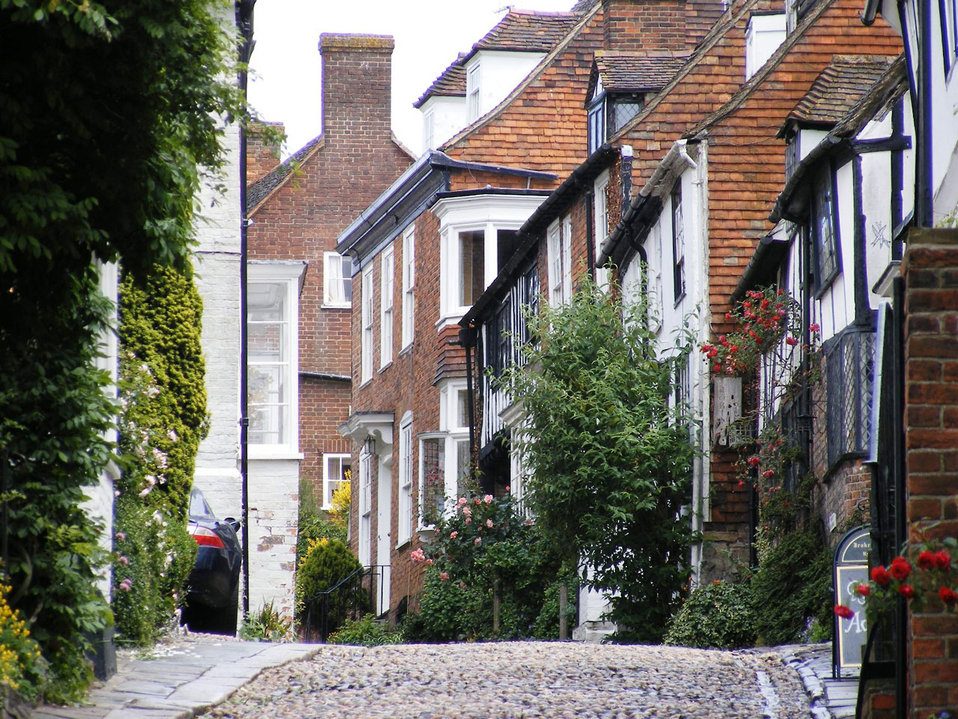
Cobbled street

The ancient town of rye, kent.